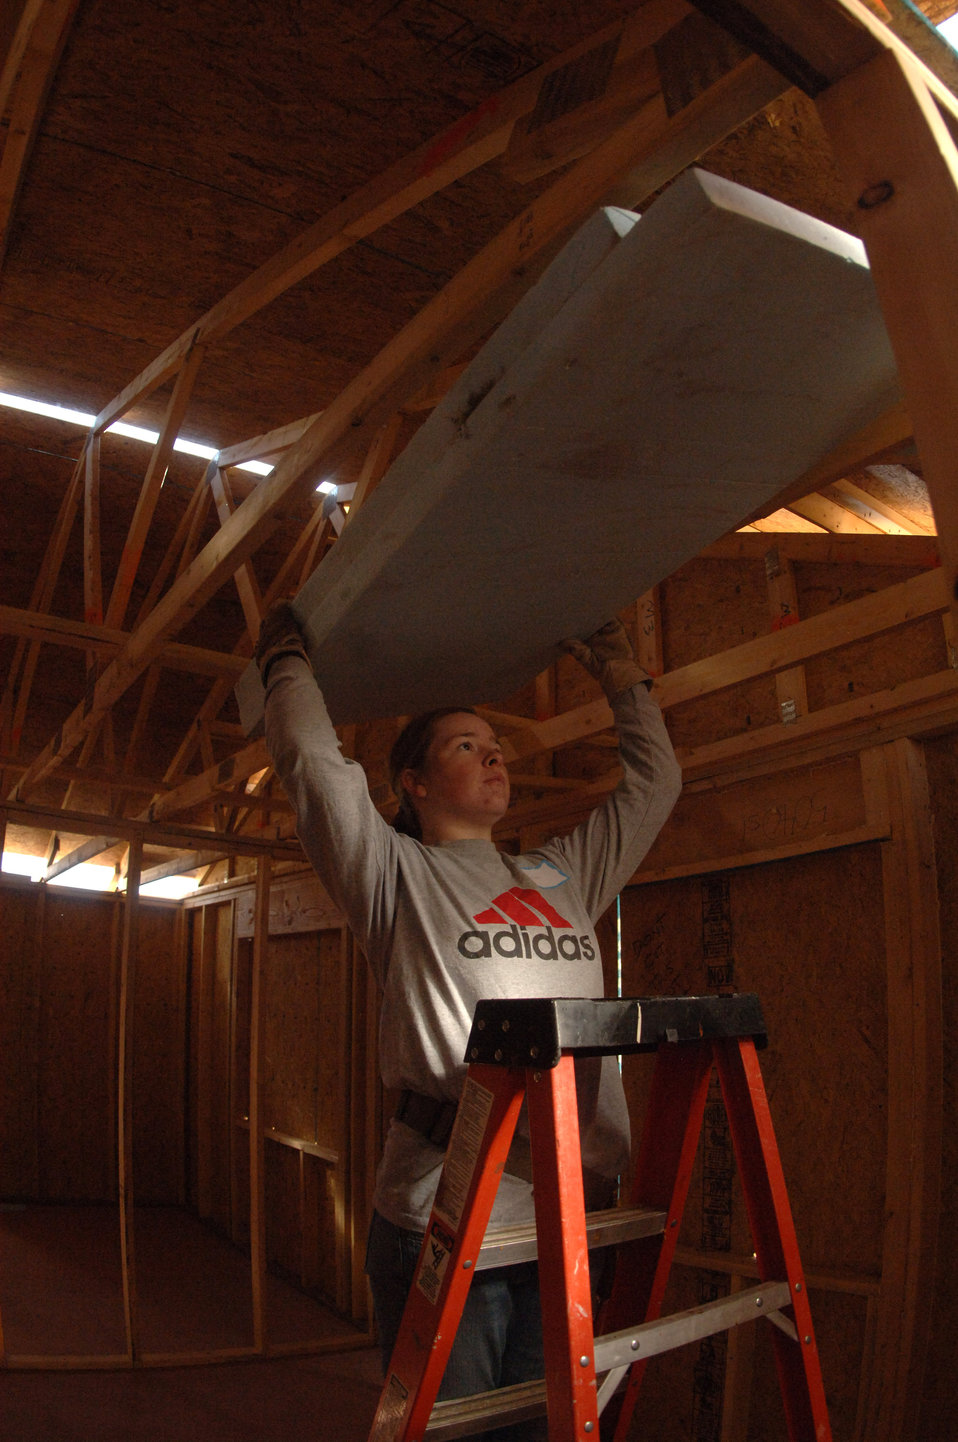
Cadets give up spring break to build homes

Cadet 4th Class Michelle Paranteau manuevers insulation in place, while helping build a home during her spring break, via Habitat for Humanity. Cadet Paranteau is one of 65 Air Force Academy cadets giving up their spring break this week, to build homes for the needy in Santa Fe, N.M.; Cody, Wyoming; El Paso, Texas; and Beaumont, Texas.